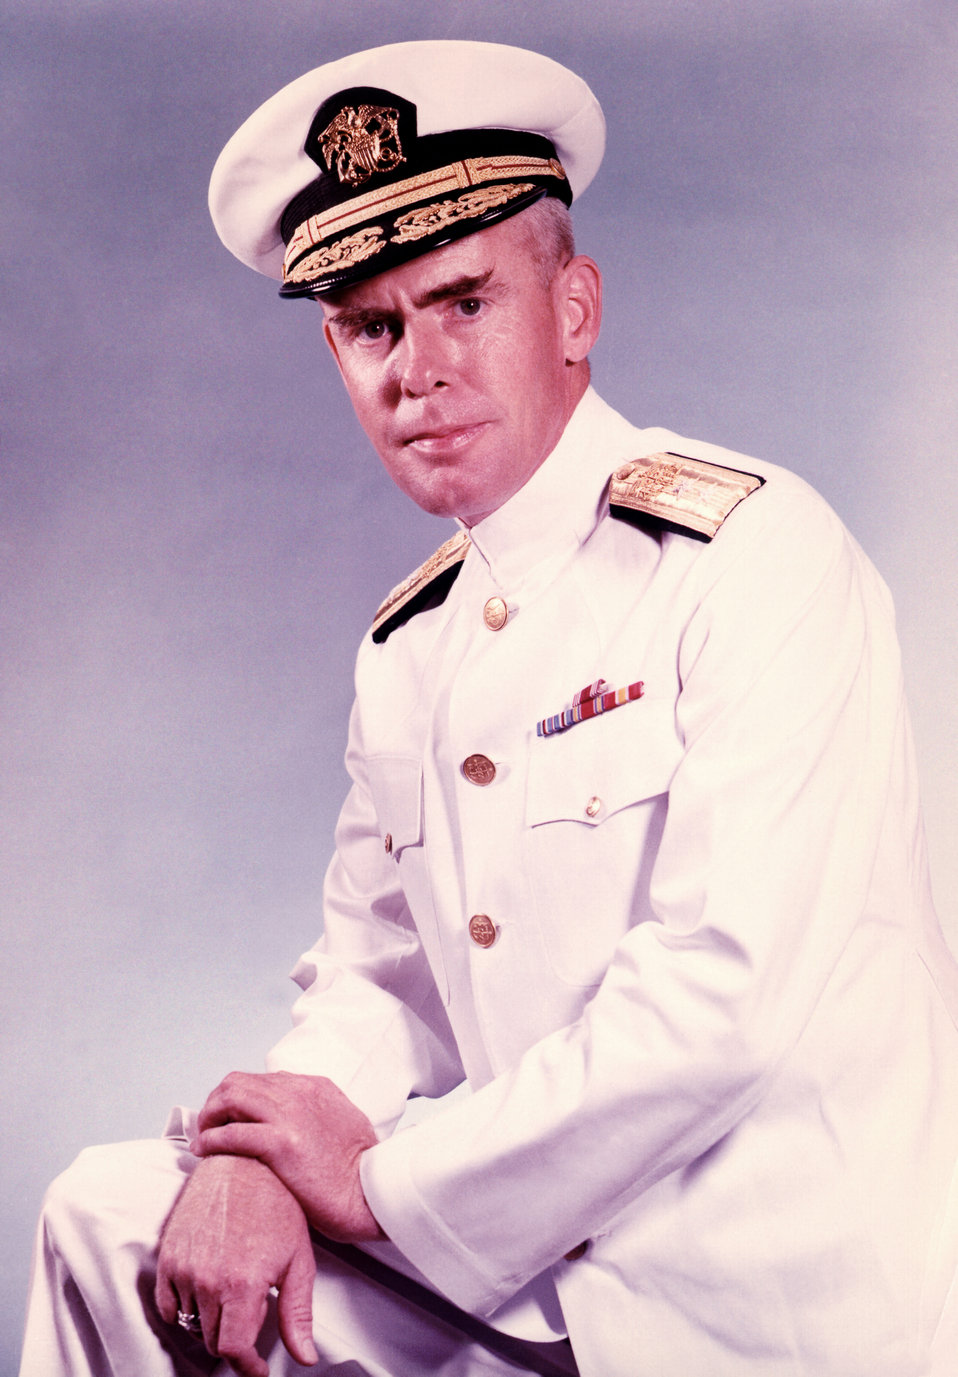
This is a photograph of Public Health Service (PHS) Commissioned Corp Admiral Jim Goddard.